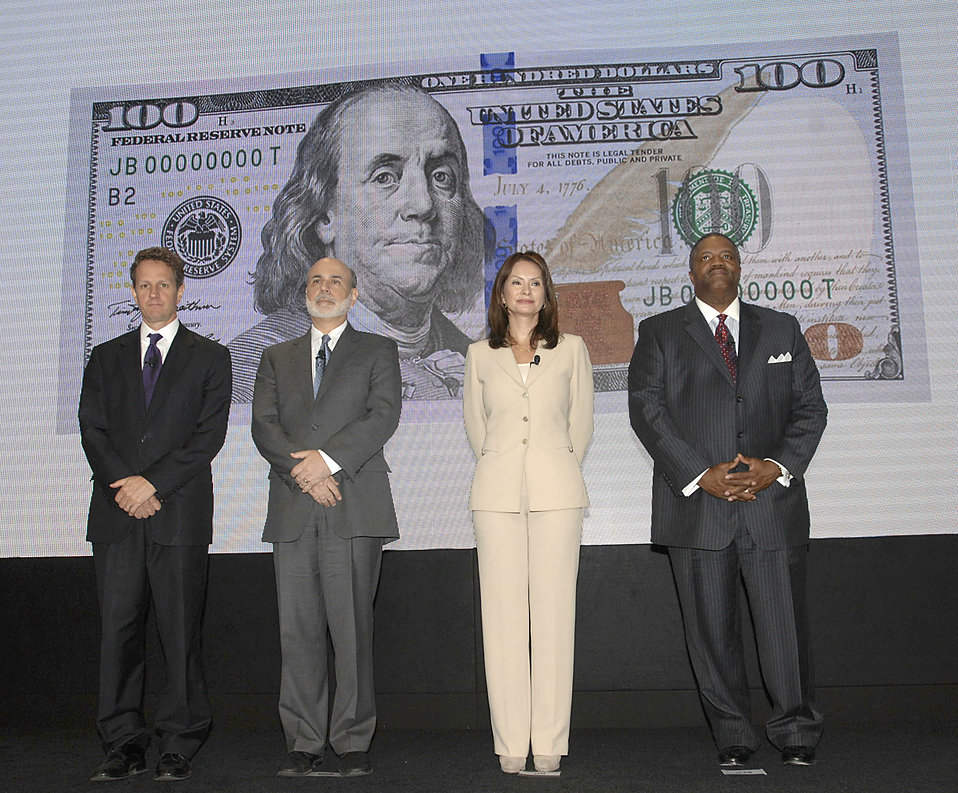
Unveiling of new $100 note, 4/21/2010

Treasury Secretary Geithner, Federal Reserve Chairman Bernanke, Treasurer Rios, and United States Secret Service Deputy Director Prewitt unveil the new design of the $100 note at Treasury Department on April 21, 2010.